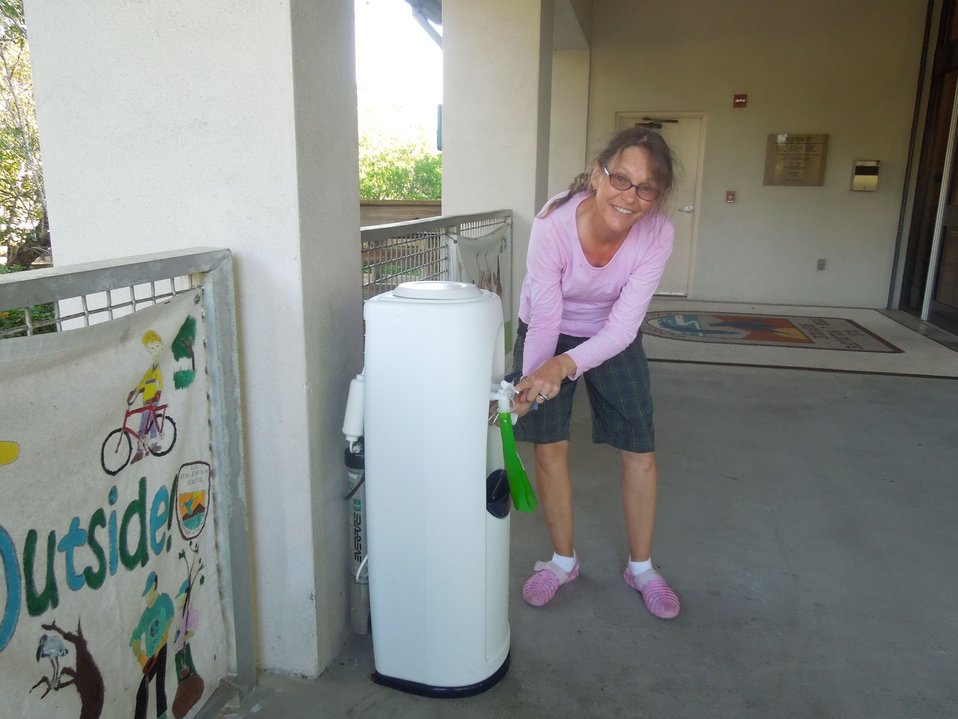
Filling up

A visitor fills up a reusable bottle at J.N. Ding Darling Refuge in Florida.